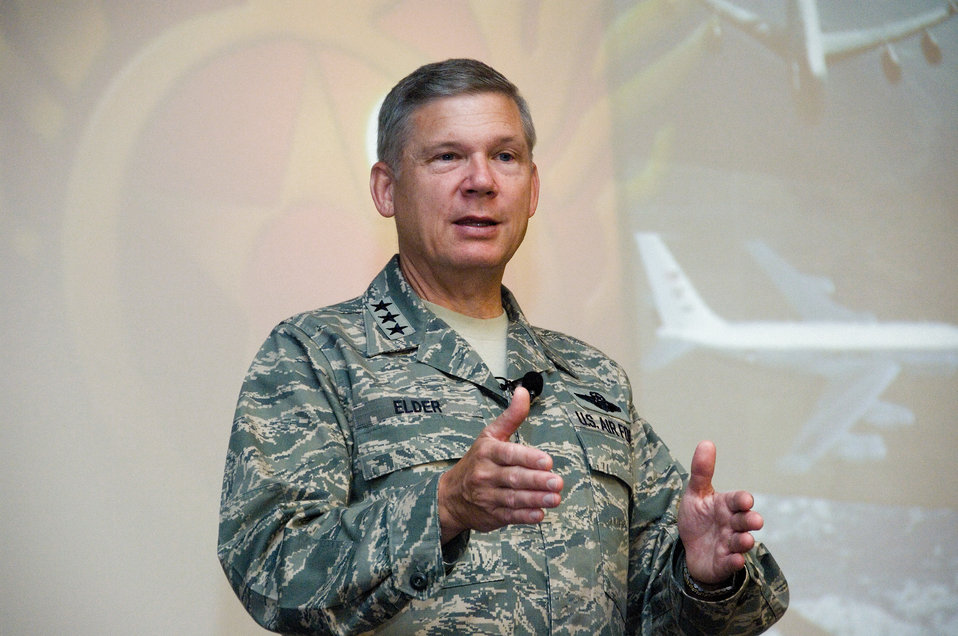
Air Force Cyberspace Symposium

Lt. Gen. Robert Elder, commander of 8th Air Force and joint functional component commander for global strike and integration at U.S. Strategic Command, speaks to attendees July 15 at the Cyberspace Symposium at Maxwell Air Force Base, Ala. The symposium brought some 250 professional civilian and military experts who gathered to discuss the implications of cyberspace as it relates to the Air Force and national defense.